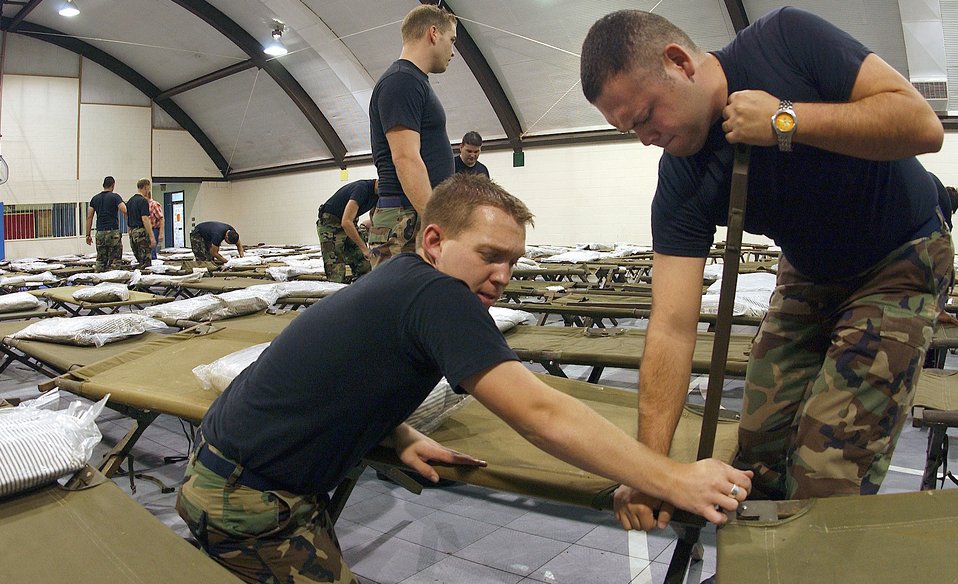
Helping in Abilene

ABILENE, Texas - Senior Airmen Chad Thomas and Jason Fuentes assemble a cot Sept. 23 at an American Red Cross shelter here. About 100 Airmen from Dyess Air Force Base volunteered to prepare three shelters for more than 450 evacuees seeking refuge from Hurricane Rita.